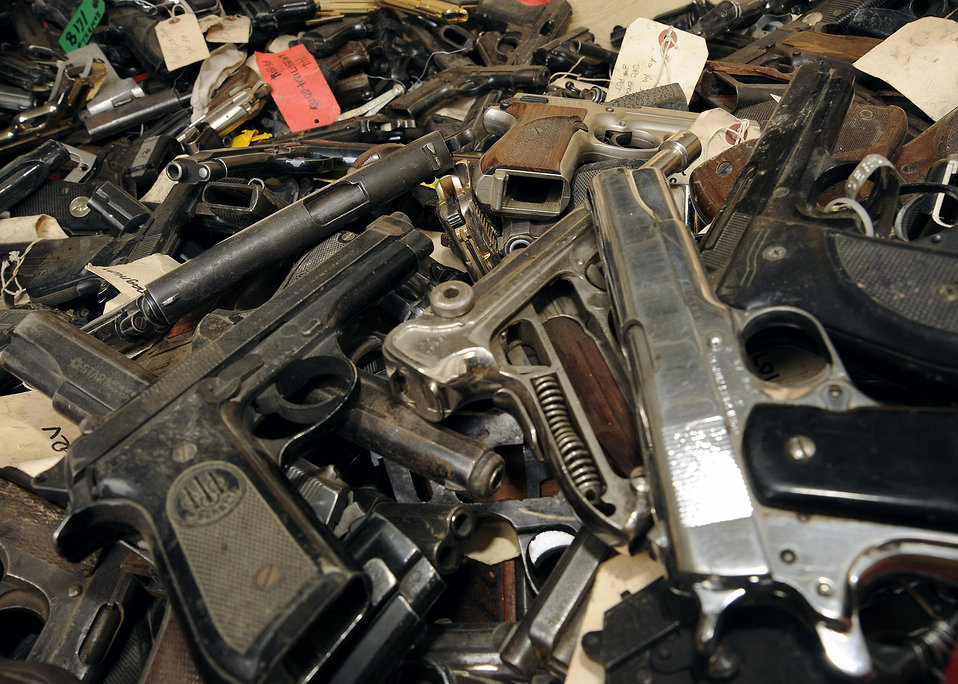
Airman tracks down parts for Iraqi maintenance depot

Pistols sit in a container waiting to be inventoried after they have been found March 4 at Taji, Iraq. The Taji national maintenance depot is responsible for taking in all captured small arms, artillery and any other weapon devices. Some of the weapons will be destroyed and others will be refurbished and given back to the Iraqi army.